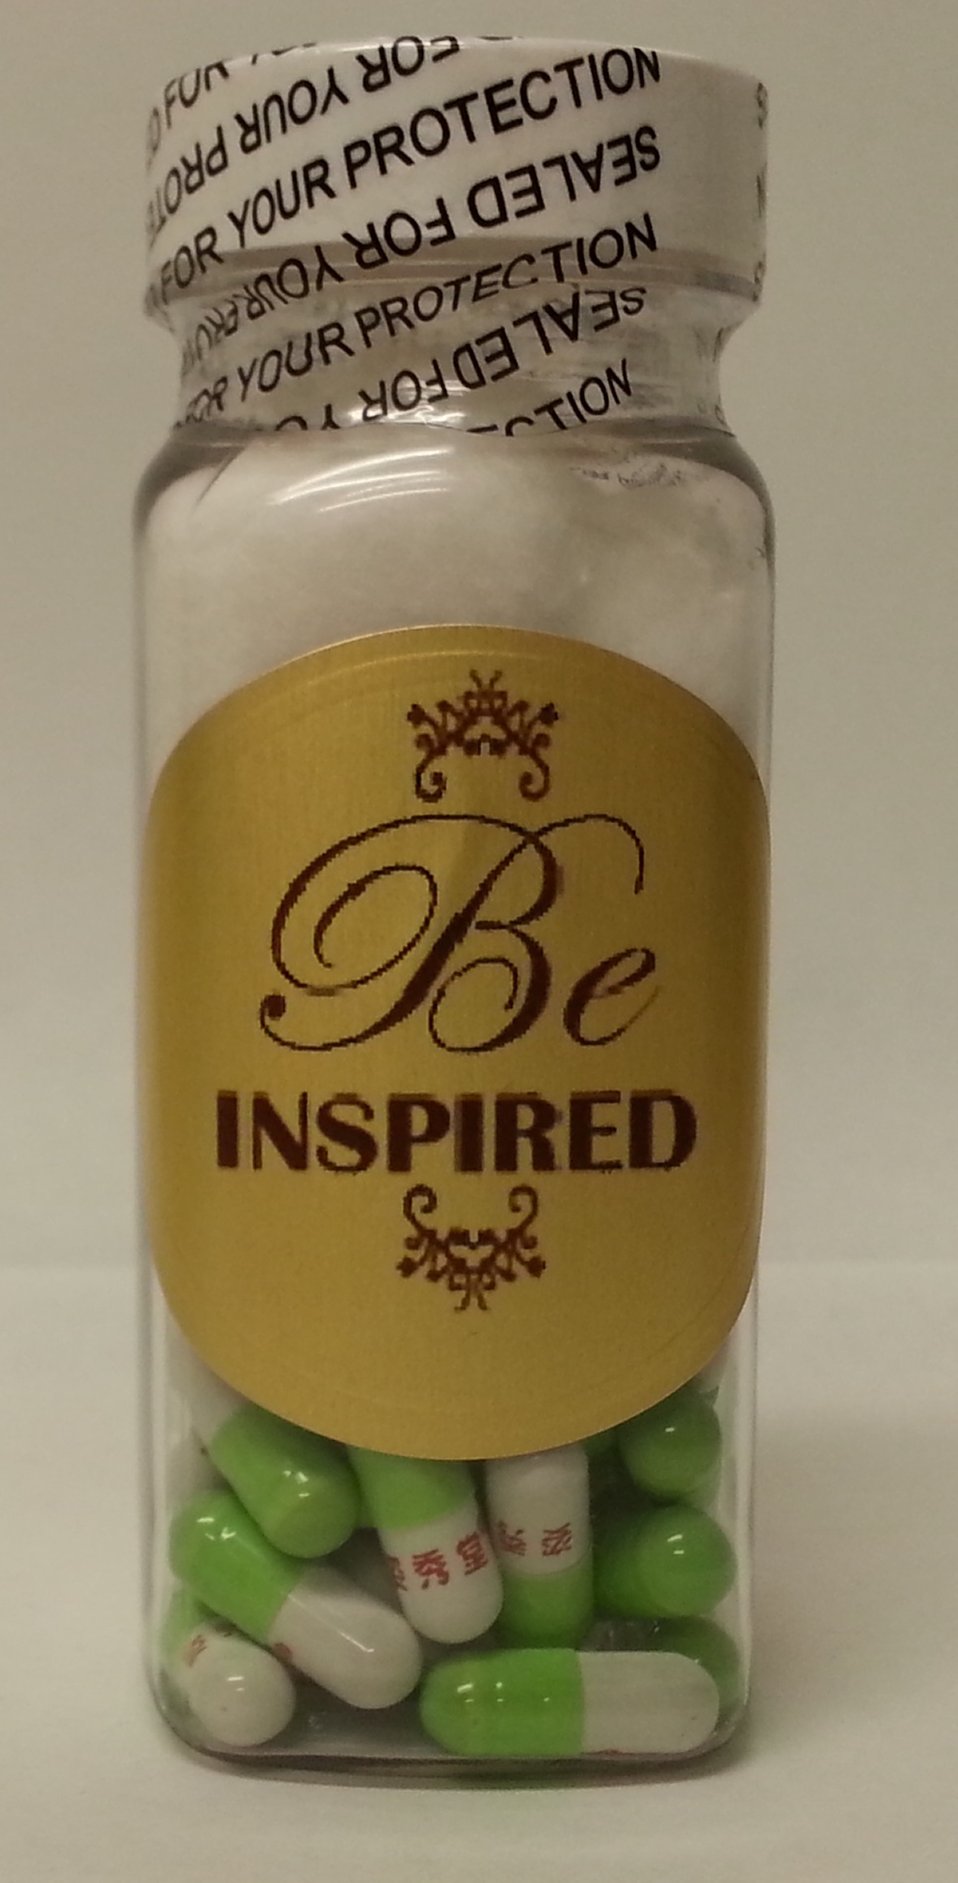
Be Inspired 10-10-2013 sibutramine, phenolphtalein

October 10, 2013 - The FDA is advising consumers not to purchase or use 'Be Inspired,' a product promoted and sold for weight loss. The product was found to contain undeclared sibutramine and phenolphthalein. For more information, go to www.fda.gov/drugs/resourcesforyou/consumers/buyingusingme...

And read this Consumer Update: Beware of Fraudulent ‘Dietary Supplements’